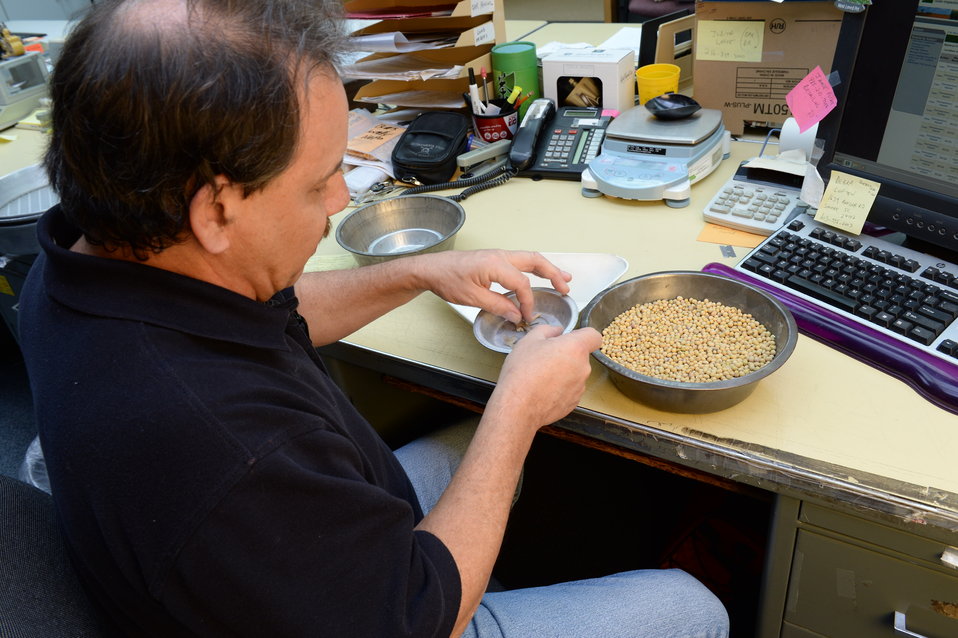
U.S. Department of Agriculture (USDA) Grain Inspection, Packers and Stockyards Administration (GIPSA) Federal Grain Inspection Service (FGIS) employee examines grain samples at the FGIS inspection laboratory in New Orleans, LA on Monday, Nov. 18, 2013.